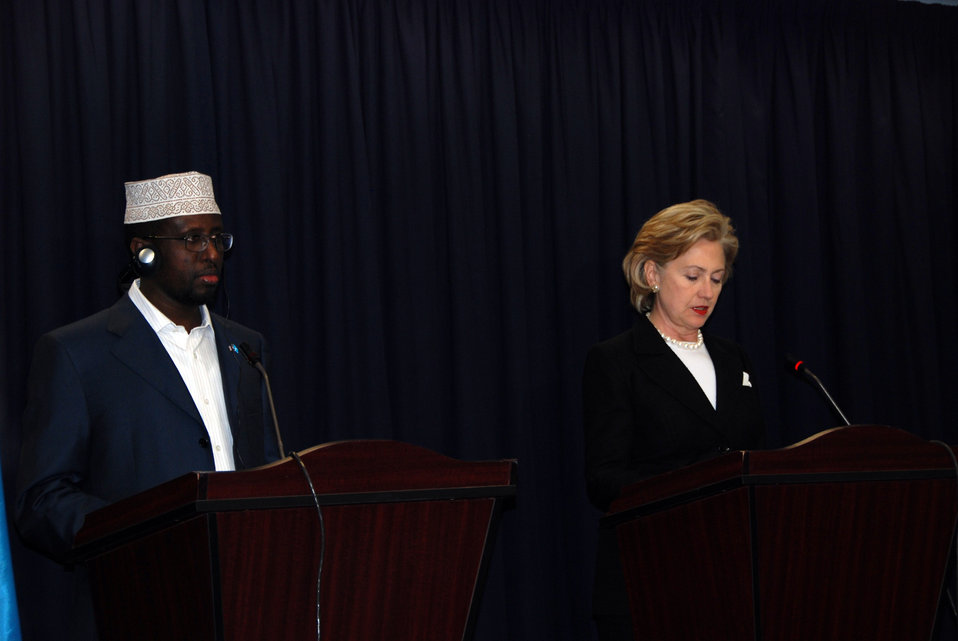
Secretary Clinton and Somali President Press Conference

U.S. Secretary of State Hillary Rodham Clinton participates in a press conference with the Somali President Sheikh Sharif Ahmed in Nairobi, Kenya August 6, 2009.